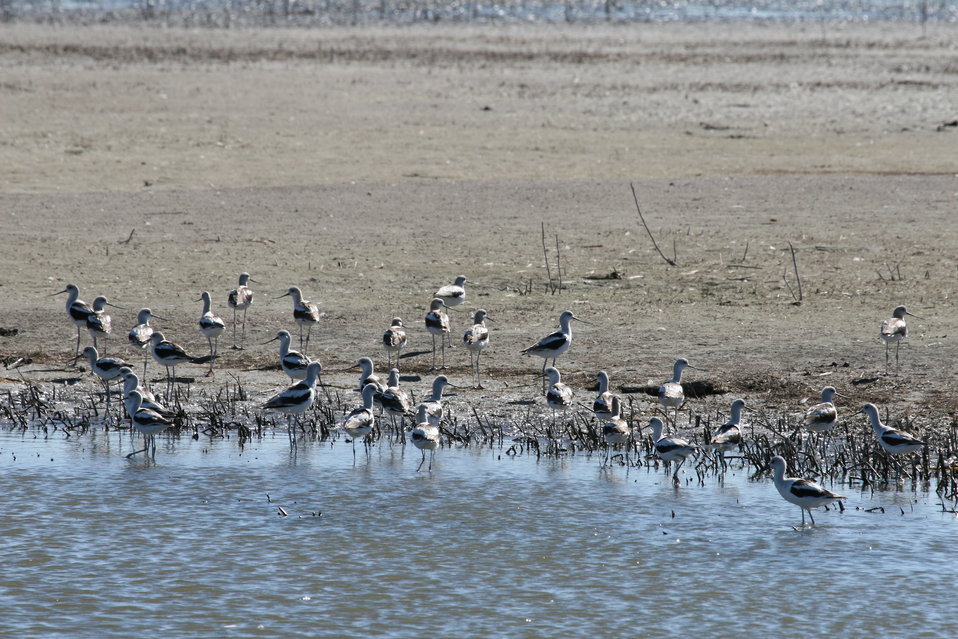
Avocets

American Avocets have long, thin, gray legs, from which they derive their colloquial name. Their plumage is black and white on the back with white on the underbelly. The neck and head are cinnamon-colored in the summer, but gray in the winter (as shown here). The long, thin bill is upturned at the end.